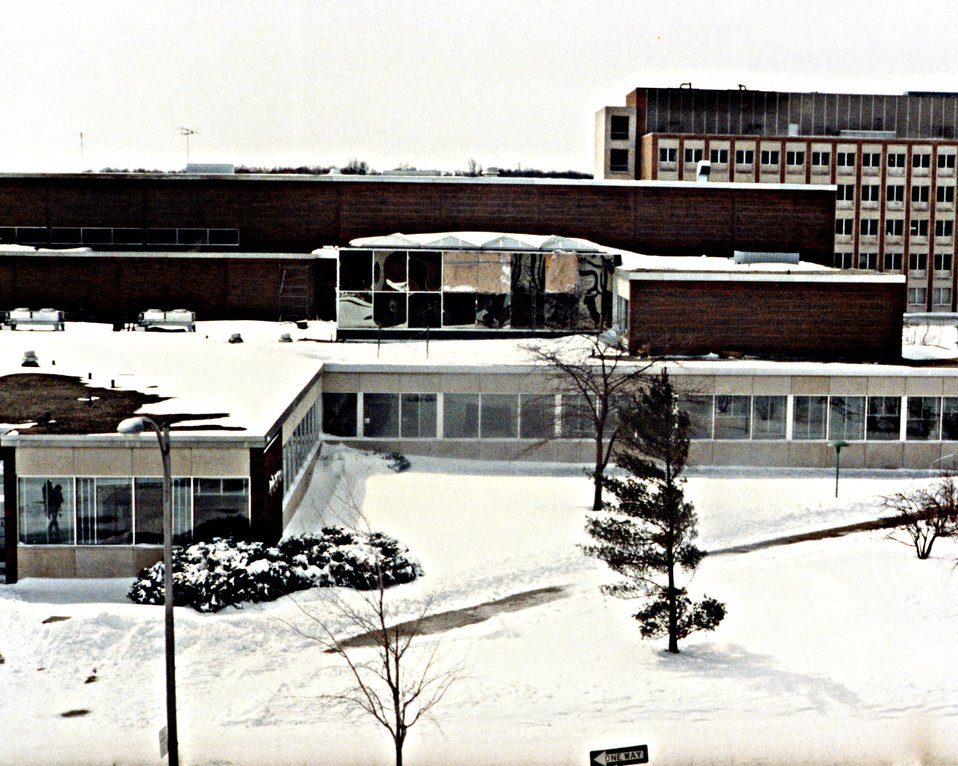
WORKERS PLACING ONE OF THE FOUR 30-TON, 5-6 FEET THICK SHIELDING DOORS.

THE NATIONAL SUPERCONDUCTING CYCLOTRON LABORATORY IS BEING CONSTRUCTED FOR DOE AT MICHIGAN STATE UNIVERSITY. THE FACILITY IS BASED ON A NEW KIND OF PARTICLE ACCELERATION, THE SUPERCONDUCTING CYCLOTRON, WHICH WILL BE USED TO STUDY THE NUCLEAR REACTIONS BETWEEN 'HEAVY IONS'. USING ULTRA- COLD, SUPERCONDUCTING TECHNOLOGY FOR THE POWER COILS HAS RESULTED IN A COMPACT CYCLOTRON WITH A UNIQUELY HIGH ENERGY GAIN. THE LABORATORY IS AN EXTENSION OF AN EXISTING FACILITY AND WILL PROVIDE A SECOND-STEP SUPERCONDUCTING CYCLOTRON AND ADDITIONAL EXPERIMENTAL AREAS, BEAM TRANSPORT SYSTEMS, RADIATION SHIELDING, AND SUPPORT AREAS.